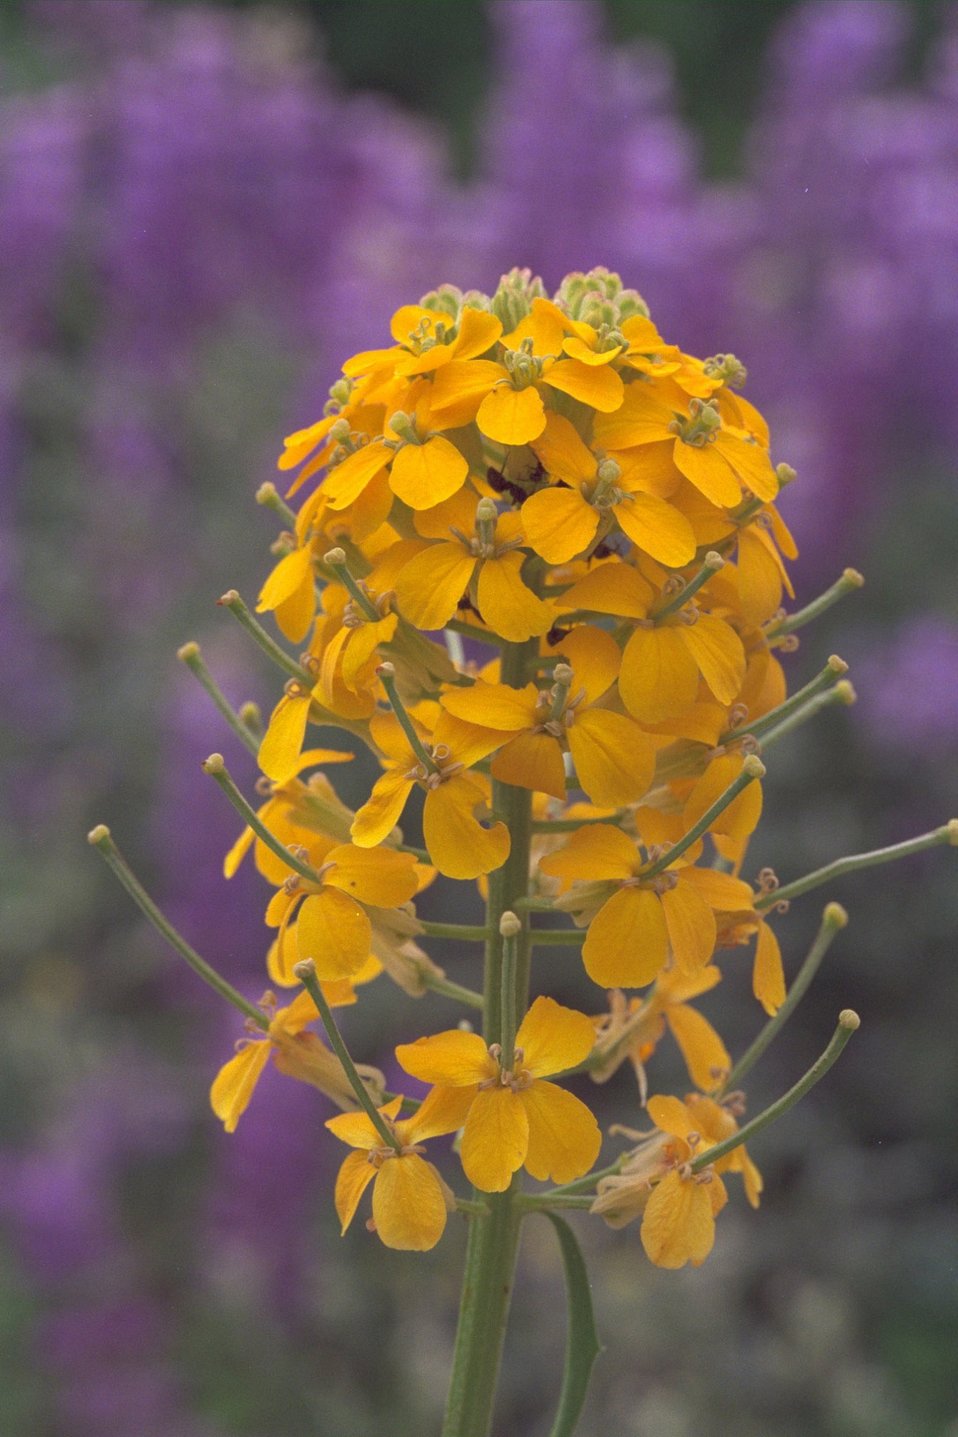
Western Wallflower (Erysimum capitatum) along Sprignette Creek, off Evans Creek.